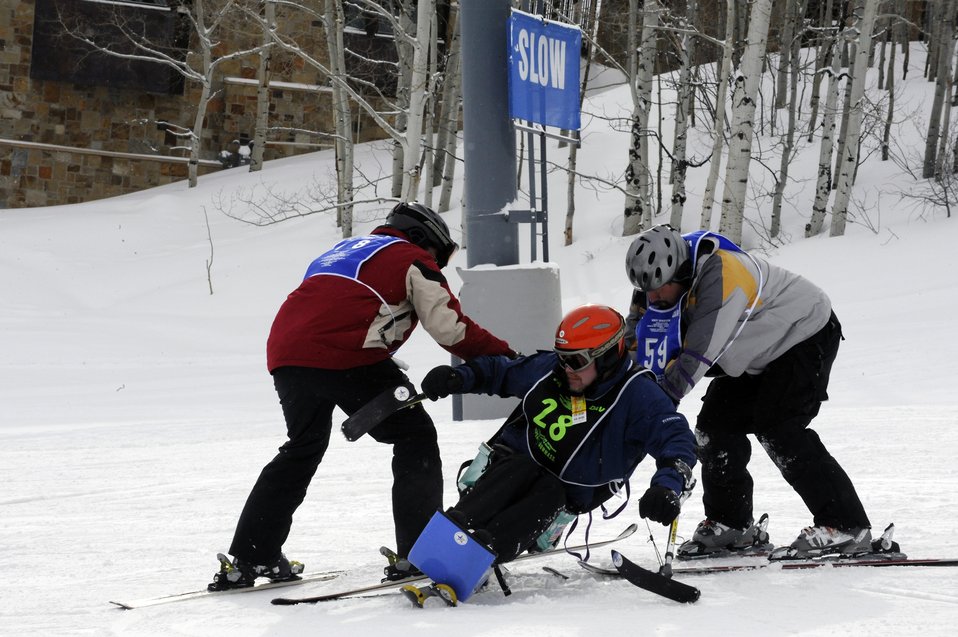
Winter rehabilitation clinic shows veterans potential

Glenn Hallberg and Mark Finken teach Michael Murphy how to ski March 30 during the 23rd National Disabled American Veterans Winter Sports Clinic. Mr. Hallberg and Mr. Finken are ski instructors for the sports clinic. Mr. Murphy is prior Air Force and his hometown is Dayton, Ohio. This is Mr. Murphy's first year attending the Disabled American Veteranss Winter Sports Clinic.